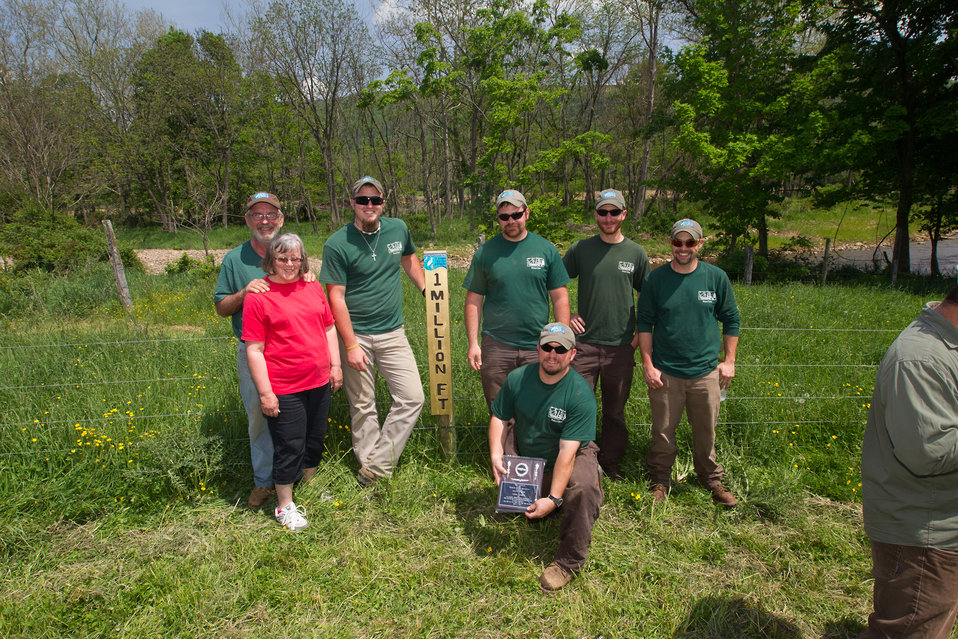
Celebrating 1 Million Feet of Conservation Fence in WV

Partners for Fish and Wildlife Program